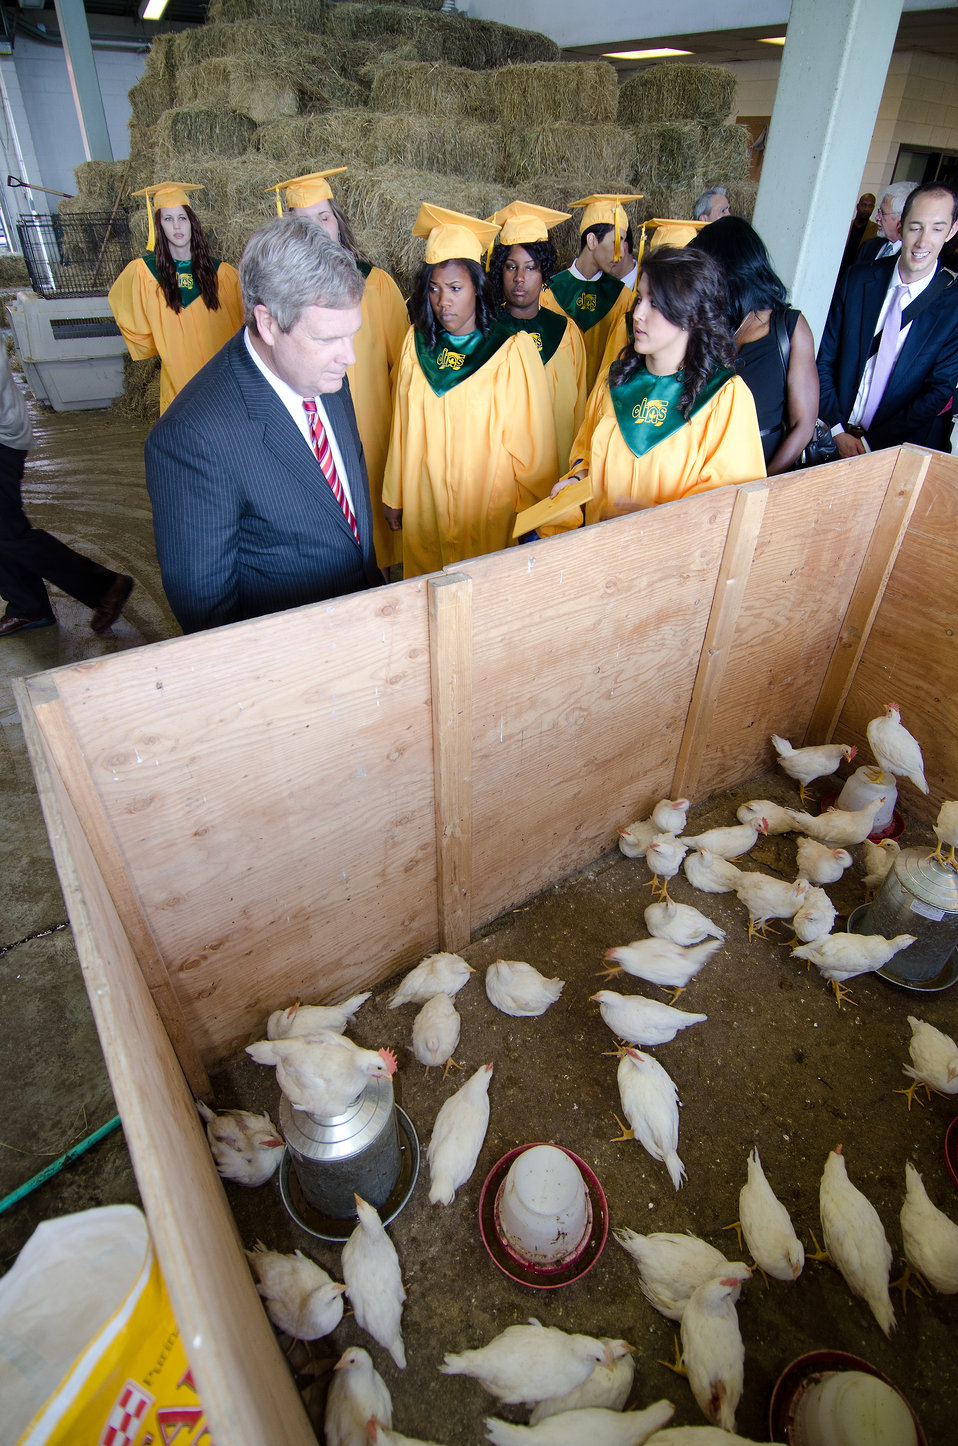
Agriculture Secretary Tom Vilsack tours the Chicago High School for Agricultural Sciences in Chicago, Illinois on Friday, June 8, 2012. Before giving the commencement address. Secretary Vilsack discussed innovation in the food and agricultural industries and the importance of the American agriculture sector in expanding economic opportunity and creating jobs in communities throughout the country.